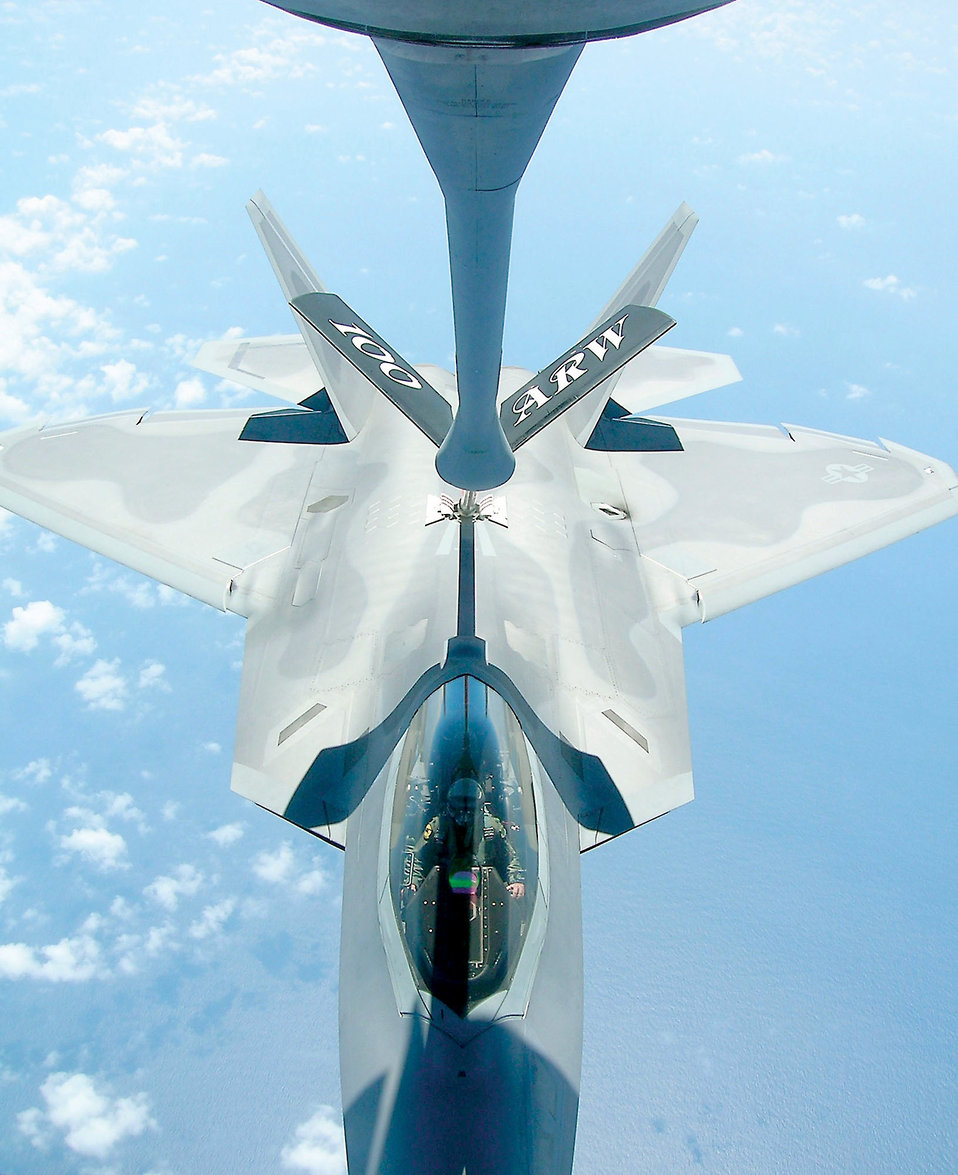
Shaw hosts Operation Iron Thunder

An F-22A Raptor refuels during Operation Iron Thunder at Shaw Air Force Base, S.C., on July 17.